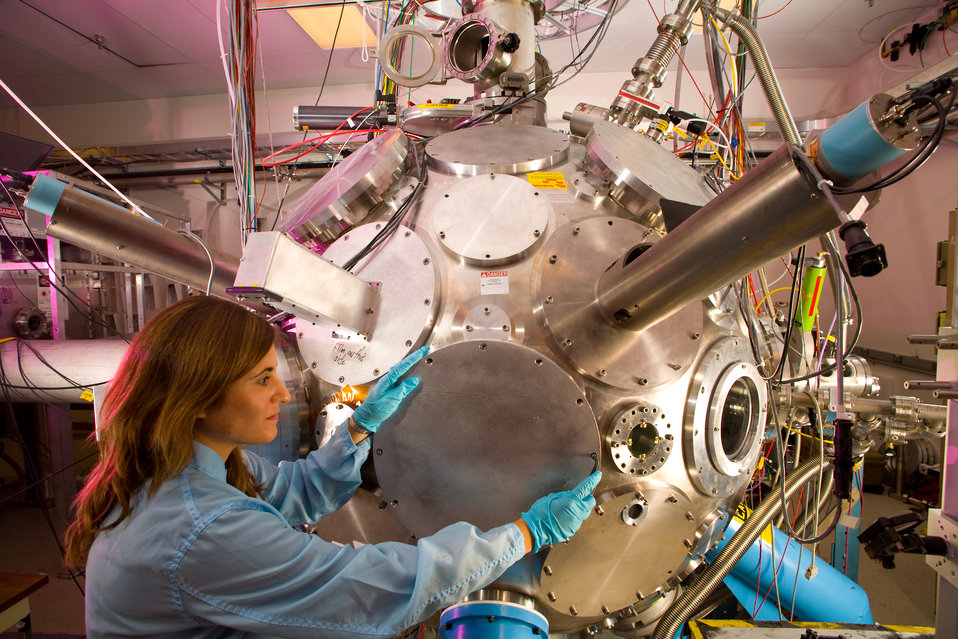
RESEARCHERS AT WORK AT THE NATIONAL STABLE ISOTOPE RESOURCE AT LOS ALAMOS NATIONAL LABORATORY (LANL) TO UNDERSTAND HOW RIBONUCLEIC ACID MOLECULES ACT AS GENETIC SWITCHES TO REGULATE PROTEIN SYNTHESIS.